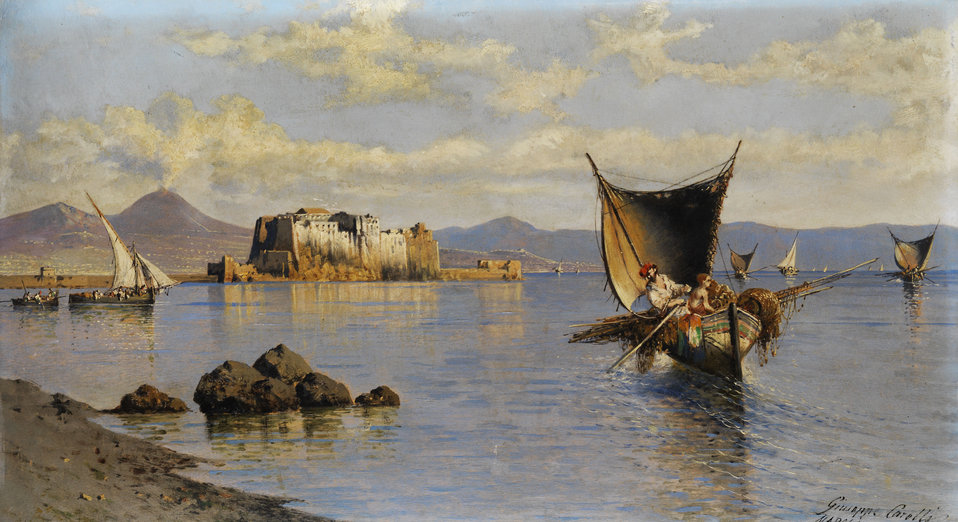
Giuseppe Carelli Bucht von Neapel mit Castel dell'Ovo